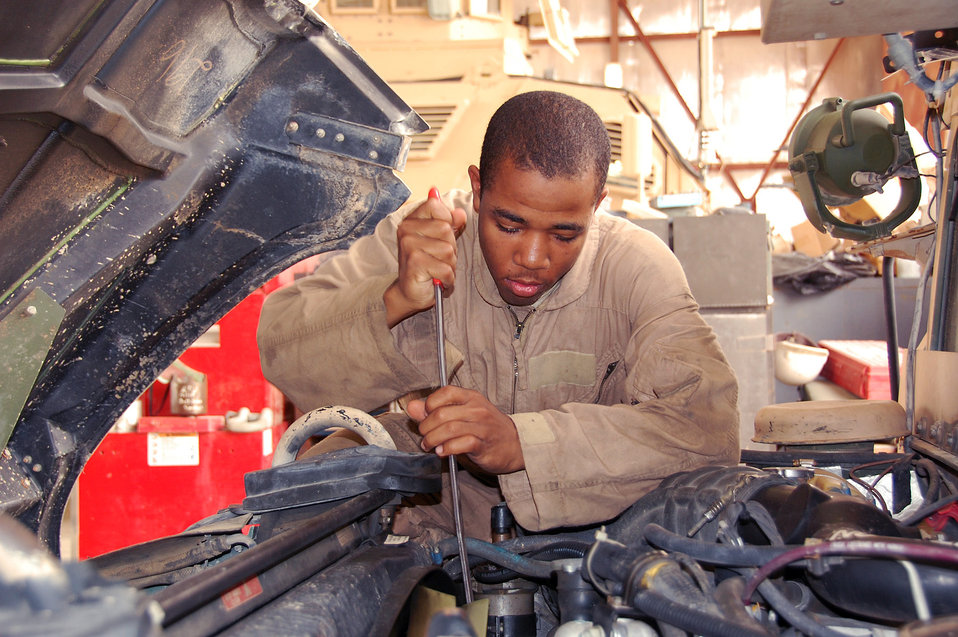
Airmen in joint motor pool keep vehicles rolling

Senior Airman Marcel Edwards works on a Humvee engine May 11 at the Camp Bucca motor pool in Iraq. Four Airmen from the 887th Expeditionary Security Forces Squadron work alongside Army vehicle maintainers to keep the squadron's Humvees, mine-resistant ambush-protected vehicles and other camp vehicles working. Airman Edwards is an 887th ESFS vehicle technician.